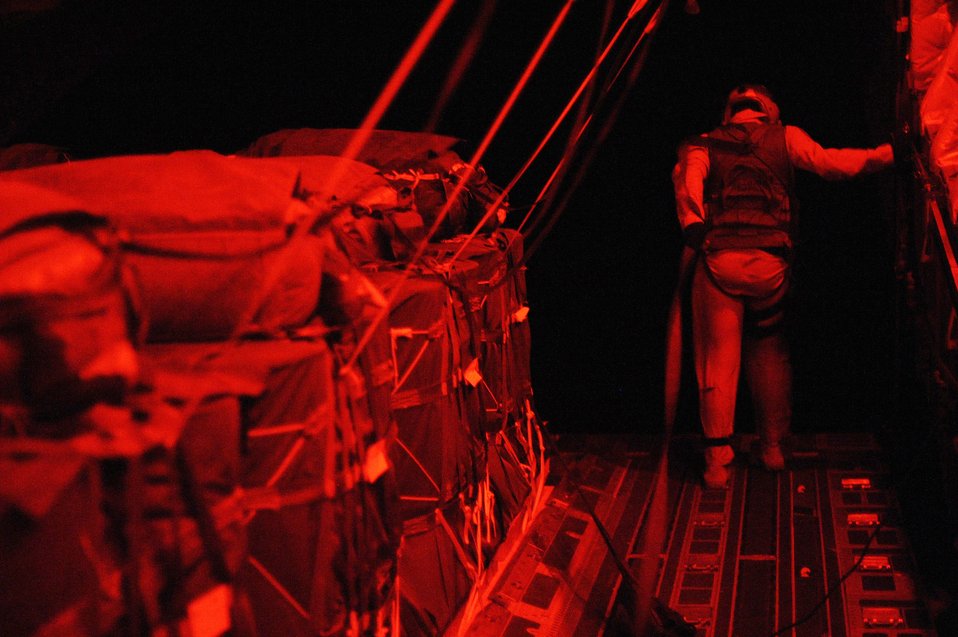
Supply drop in Afghanistan

Senior Airman Bryce Kester looks out the ramp of a C-17 Globemaster III during a supply airdrop for a forward operating base in Afghanistan, Aug. 27, 2009, in support of Operation Enduring Freedom. Airman Kester is a loadmaster from the 817th Expeditionary Airlift Squadron, and deployed from McChord Air Force Base, Wash.